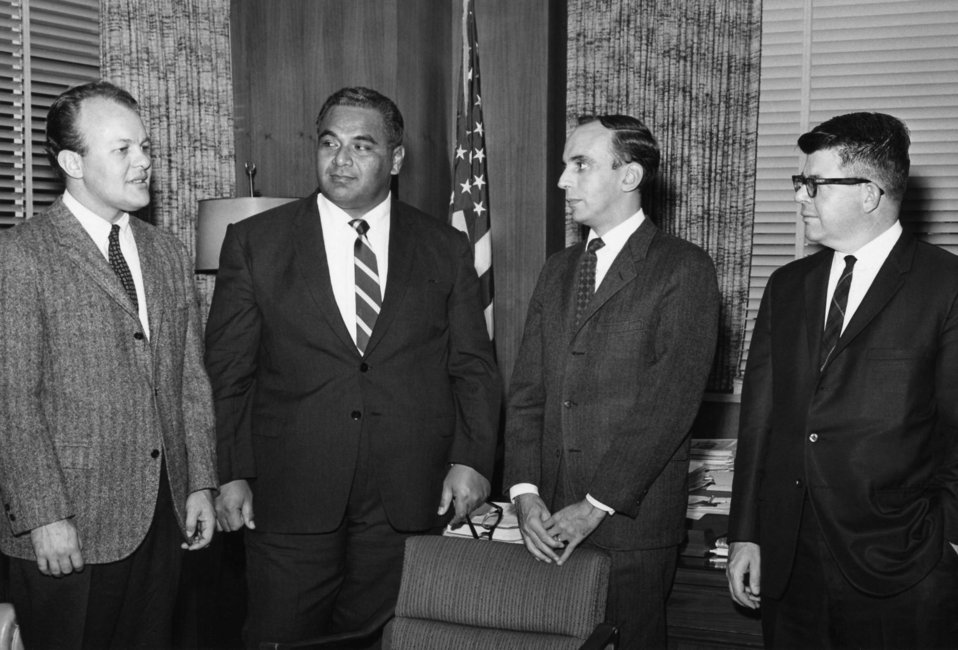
This historic 1967 photograph features (left to right) Dr. Ronald R. Roberto (EIS 1962), Prince Tu'ipelehake of Tonga, former Centers for Disease Control Director, Dr. David J. Sencer (1966-1977), and former Assistant Surgeon General, Dr. J. Donald Millar.